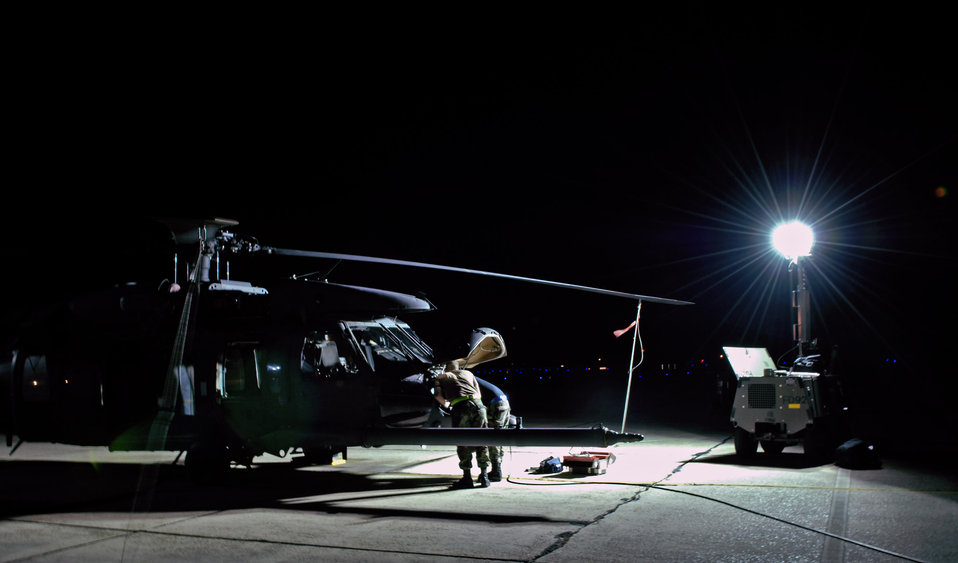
Paving the way

Senior Airman John Baia and Airman 1st Class Eric Dininger work on an HH-60G Pave Hawk helicopter Oct. 31 at Moody Air Force Base, Ga. Moody AFB Airmen work around the clock to ensure flight success of the aircraft. Airmen Baia and Diniger are assigned to the 23rd Equipment Maintenance Squadron.